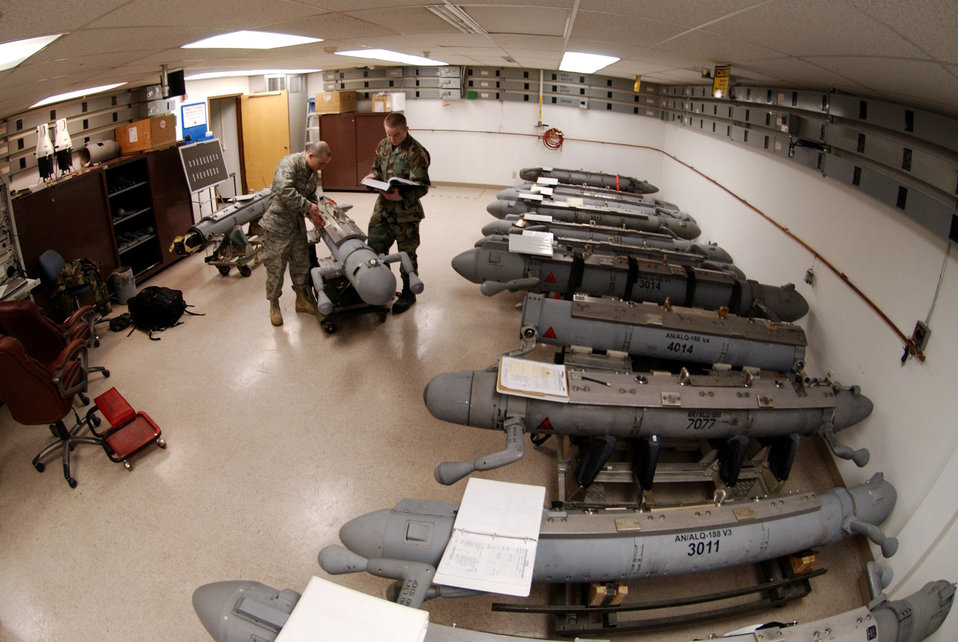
Electronic attack pod increases lethality

Senior Airman Frank Canfield assists Airman 1st Class Timothy Ogburn in replacing safety wire on an electronic attack pod Feb. 27 in the Avionics Flight at Eielson Air Force Base, Alaska. The pods, maintained by the flight against Alaska's harsh arctic winters, provide an offensive electronic attack that degrades an enemy aircraft's radar. Airman Canfield is an avionics sensors journeyman and Airman Ogburn is an electronic warfare journeyman. Both are assigned to the 354th Maintenance Squadron.